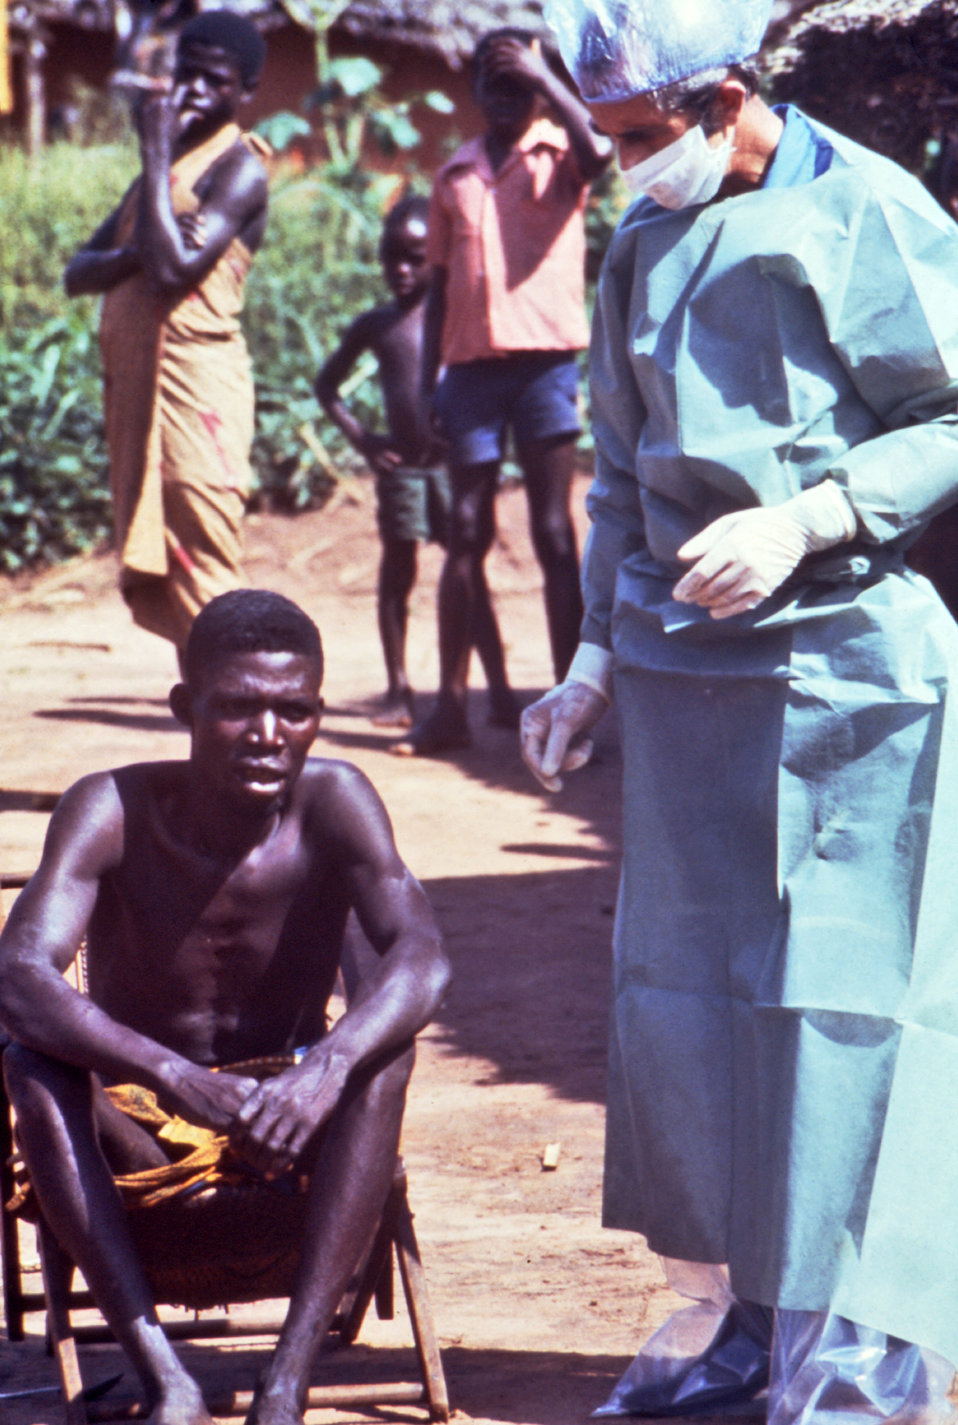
This photograph shows a health official (right), dressed in protective garments, standing next to a Zairian during a 1976 Ebola investigation.